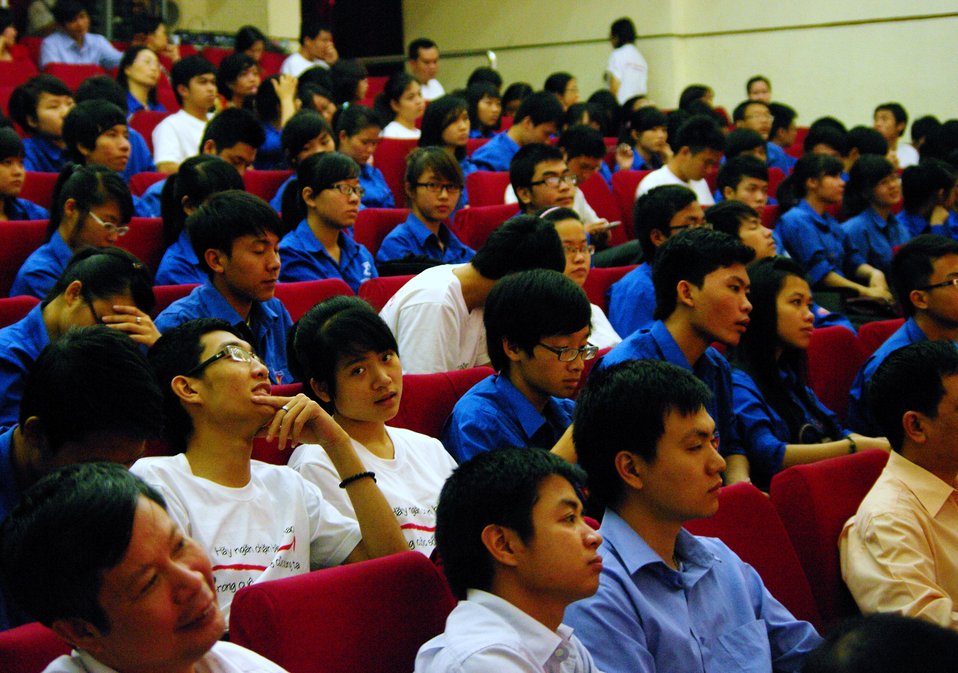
Youth Union Members at the World TB Day Event in Hanoi

March 23, 2013